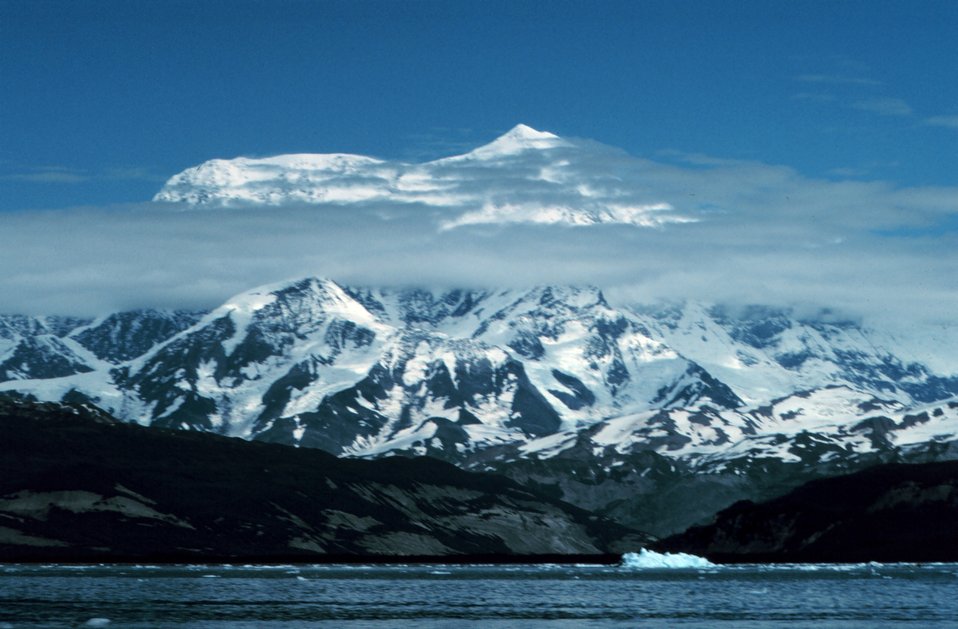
Photo #12 of Mount St. Elias sequence. Mount Saint Elias is one of the largest mountains visible from the sea on the North American continent. It rises to a height of 18,008 feet in a distance of less than 20 miles from sea level at Icy Bay.